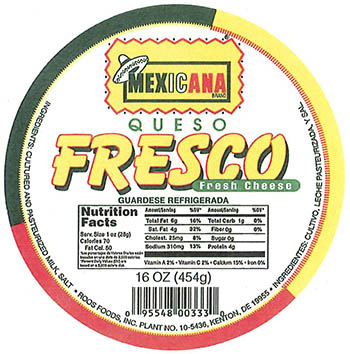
RECALLED – Variety of cheeses

February 23, 2014 – Product Recall – Roos Foods Voluntarily Recalls Variety of Cheeses (listed below) Due to Possible Health Risk.